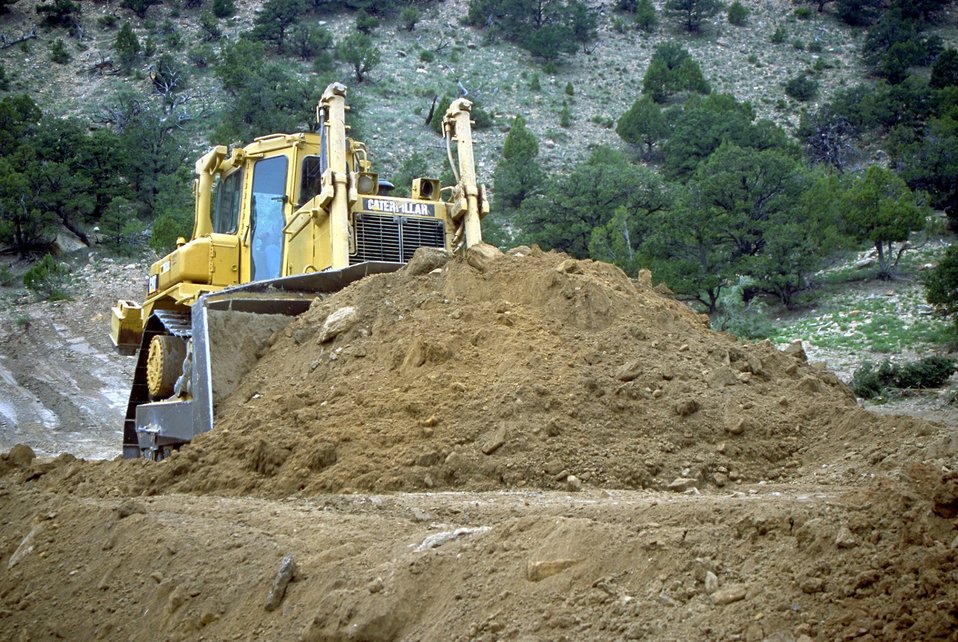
Building a drill pad for coal bed methane production near price, Utah.